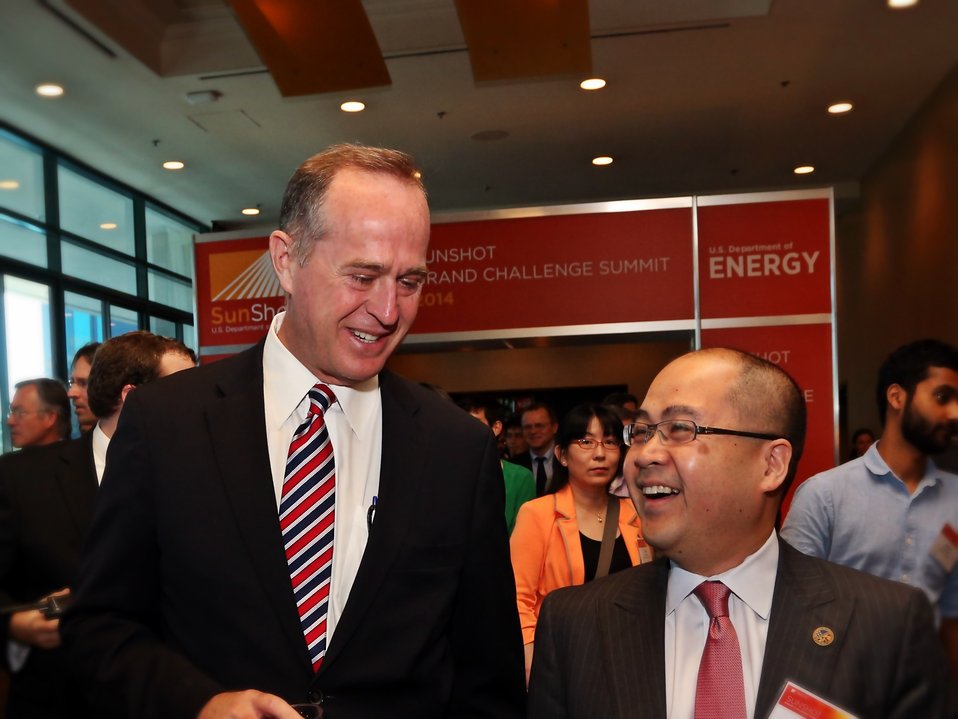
Tech Forum 2

Anaheim Mayor Tom Tait walking with SunShot Director Minh Le and attendees to the Tech Forum.